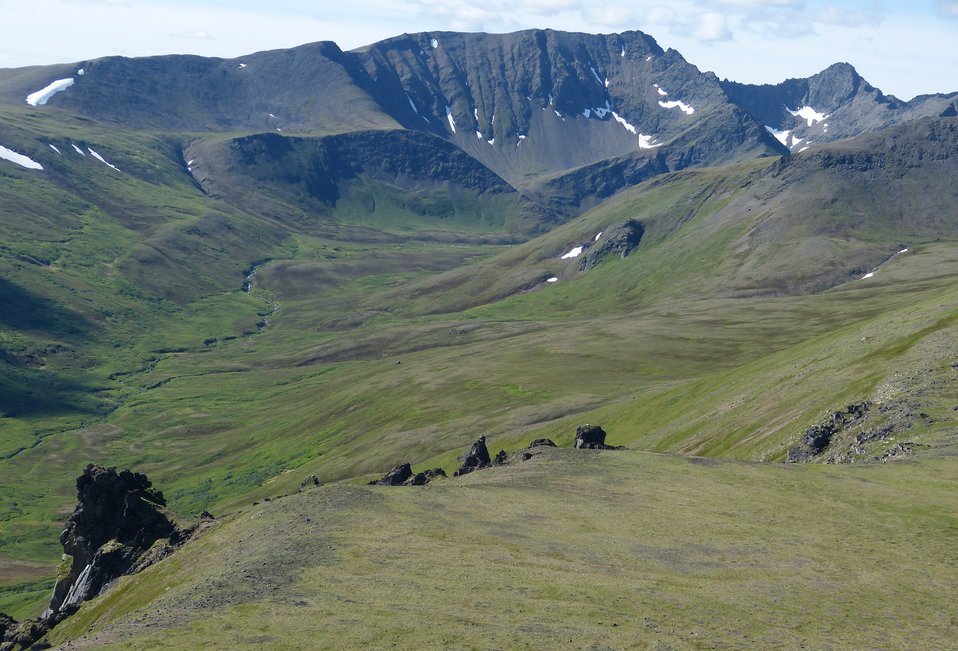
Kilbuck Mountains, Yukon Delta National Wildlife Refuge

Photo by: Kristine Sowl,
USFWS, Yukon Delta NWR, July 11, 2013